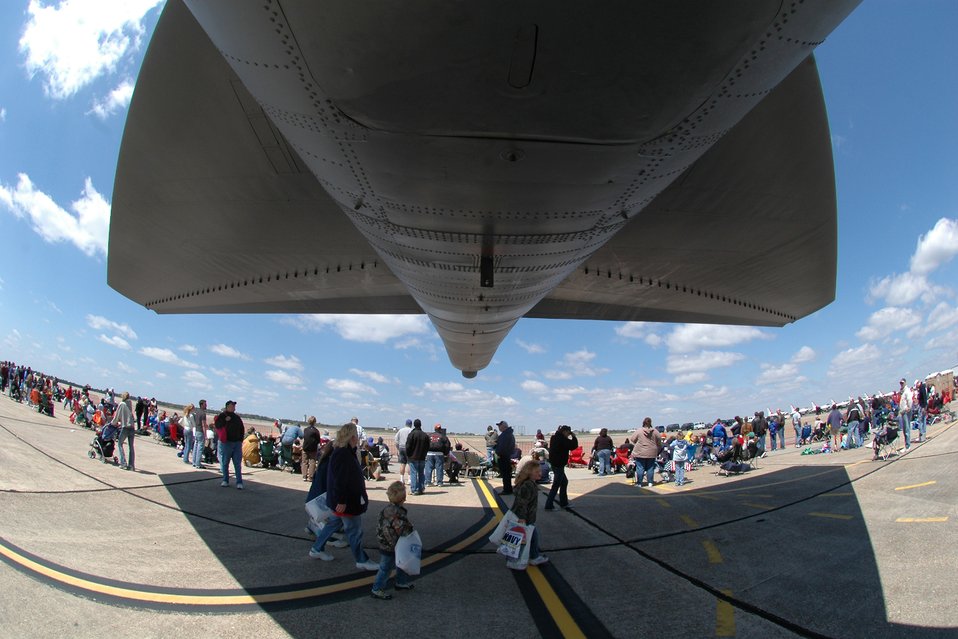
A little shade

Spectators gather underneath the shadow of the B-52 Stratofortress during the 2007 Eglin Air Show April 15 at Eglin Air Force Base, Fla.